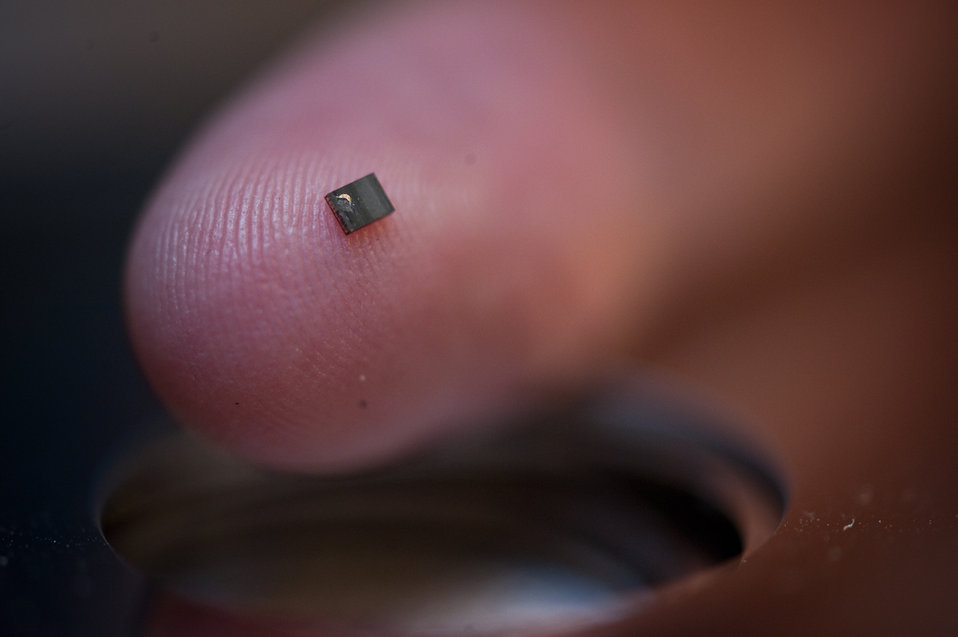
A close look at DoD Cyber Crime Center

A hard drive read/write head at the Defense Computer Forensic Laboratory Sept. 9, 2010, in Linthicum, Md. Read/write heads ride on a microscopic layer of air that develops on the surface of the platter(s), some that spin up to 10,000 rotations per minute inside a hard drive. The slightest touch of a head onto a platter disk will cause physical damage and render that side of the disk unreadable.